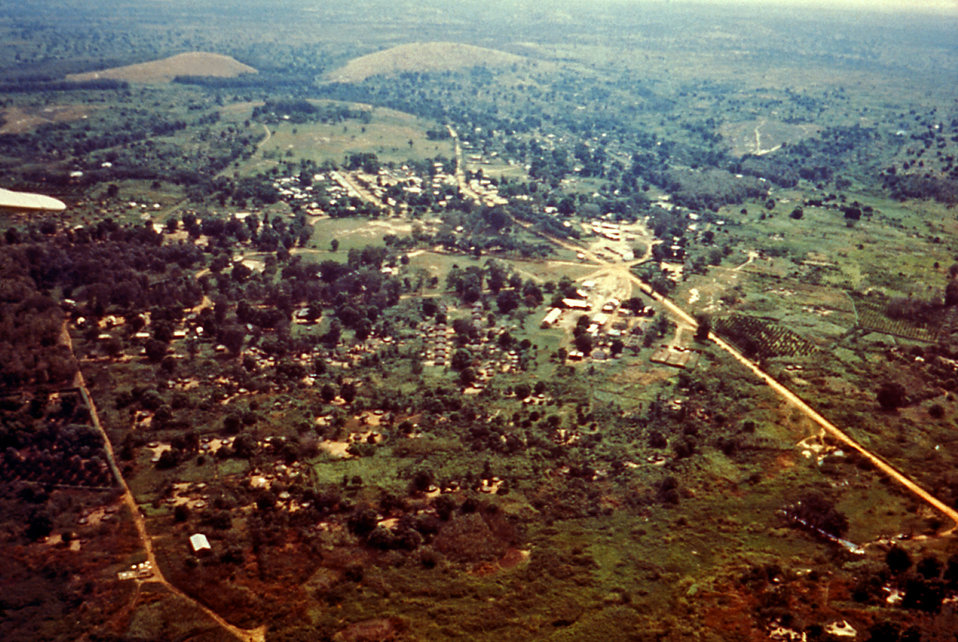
This aerial photograph was captured while overlooking Yambuku, Zaire, where in 1976, the first clinical signs of the Ebola virus appeared in a patient treated at a mission hospital run by Flemish nuns.